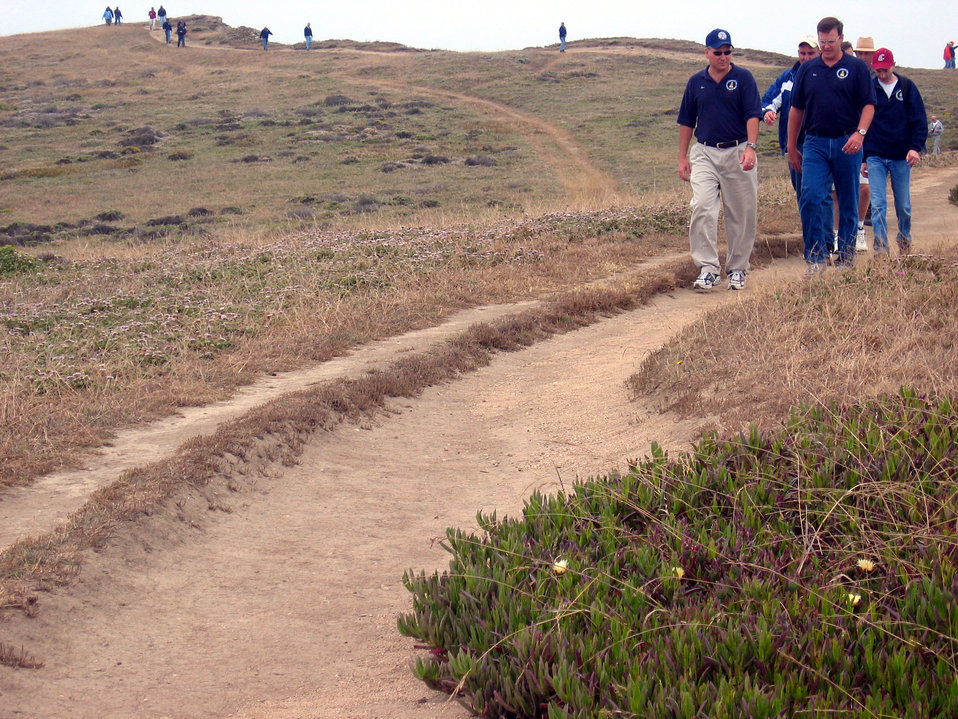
A different viewpoint

BODEGA BAY, Calif. -- Students from the Coast Guard Chief Petty Officer's Academy hike along the Sonoma coastline during their course. More than 60 students, including four Air Force senior noncommissioned officers, are midway through a five-week course that stresses leadership and teamwork.